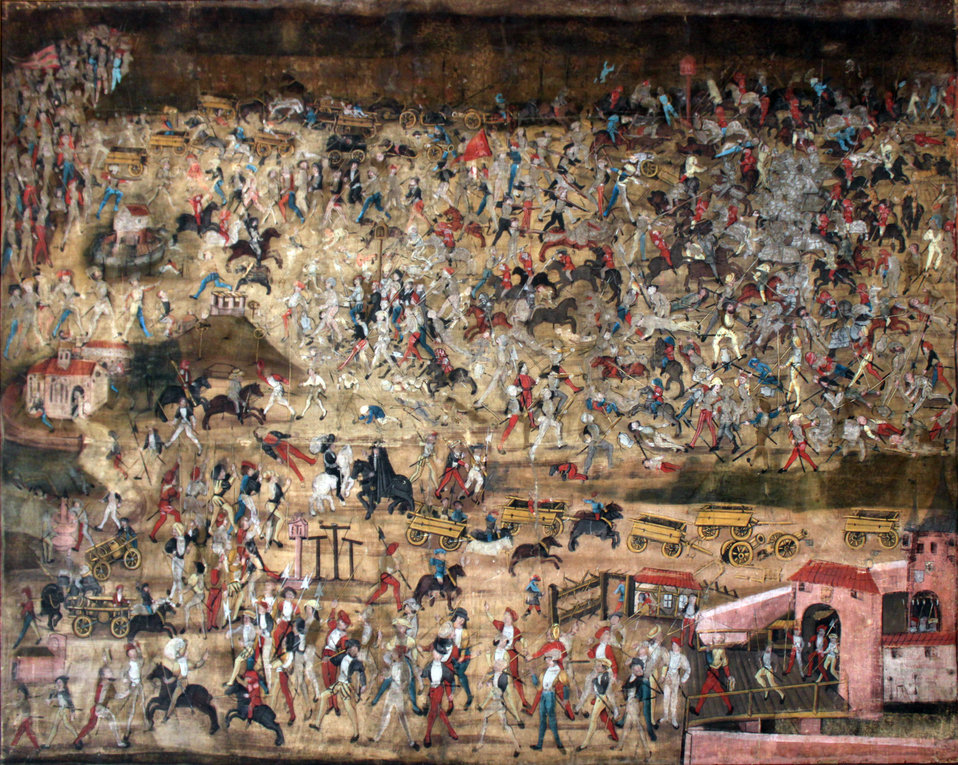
1502 Die Schlacht im Walde anagoria